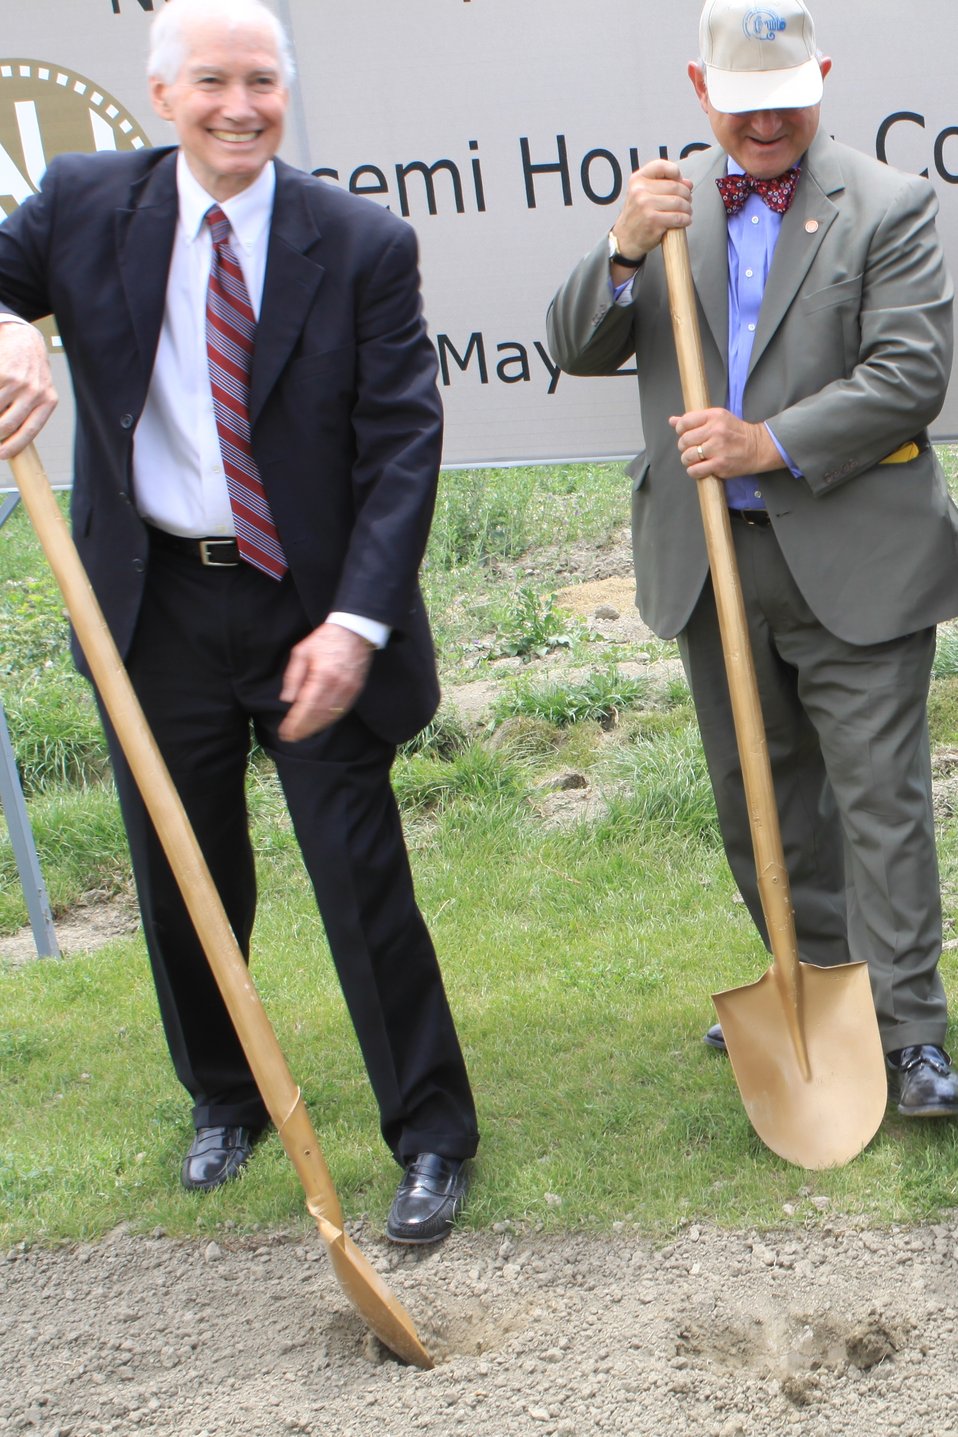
100526 AUAF Graduation 416